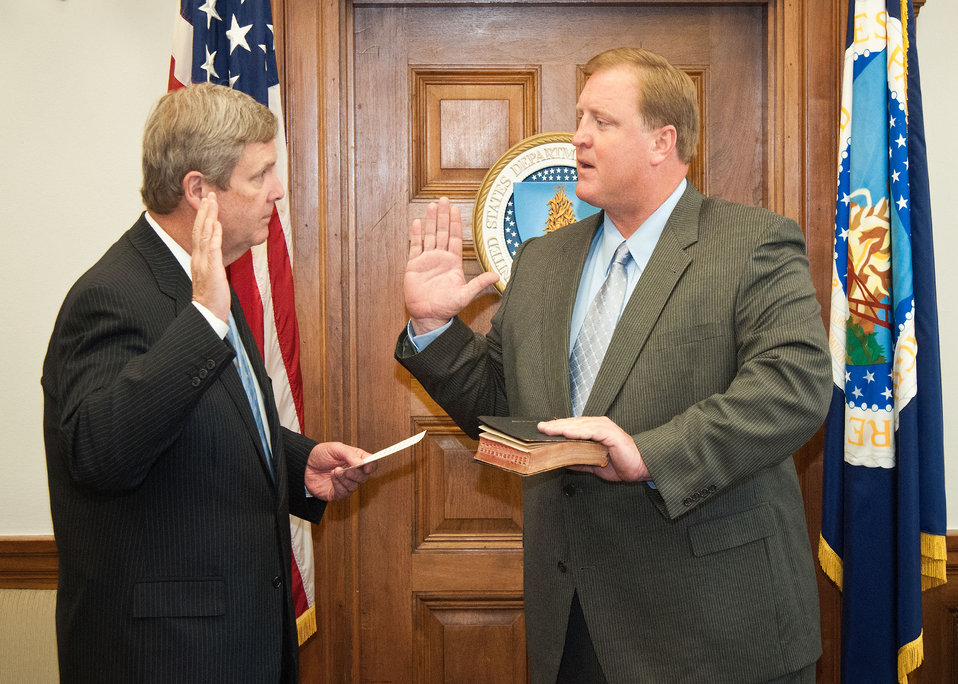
Agriculture Secretary Tom Vilsack administers the Oath of Office to former Iowa Governor Chester Culver for the Federal Agricultural Mortgage Corporation, commonly known as Farmer Mac at the United States Department of Agriculture in Washington, D.C., Wednesday, April 4, 2012. Governor Culver was nominated by President Barack Obama last summer and recently confirmed by the Senate this week. Farmer Mac was created by Congress to establish a secondary market for agricultural mortgage and rural utilities loans to increase the availability of long-term credit at stable interest rates to segments of rural America.